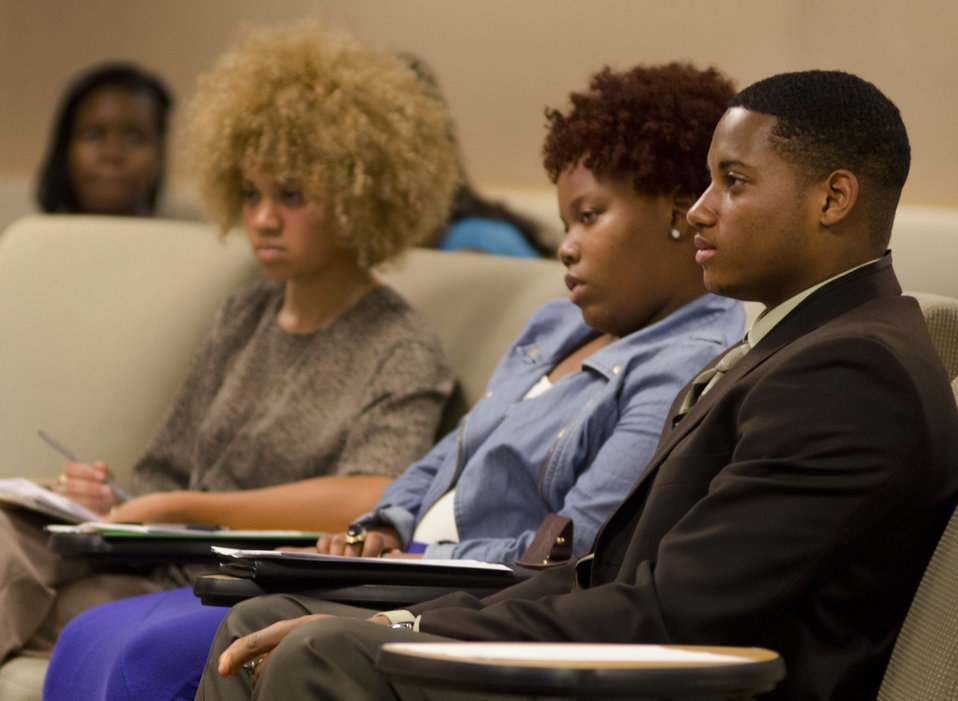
(L to R) U. S. Department of Agriculture (USDA) Departmental Management (DM) intern Amber Mathews, National Institute of Food and Agriculture (NIFA) intern Montia Medley and USDA DM intern Peter Calhoun listen to presentation at the USDA Internship Program Listening Session held in USDA’s South Building in Washington, D.C. on Monday, August 7, 2012. The purpose of the USDA Internship Program Listening Session is to provide interns with a forum to express their views about their experiences as a USDA intern. These young people will be among the most promising future USDA leaders and participate in an individual discussion and group session that will develop leadership skills.